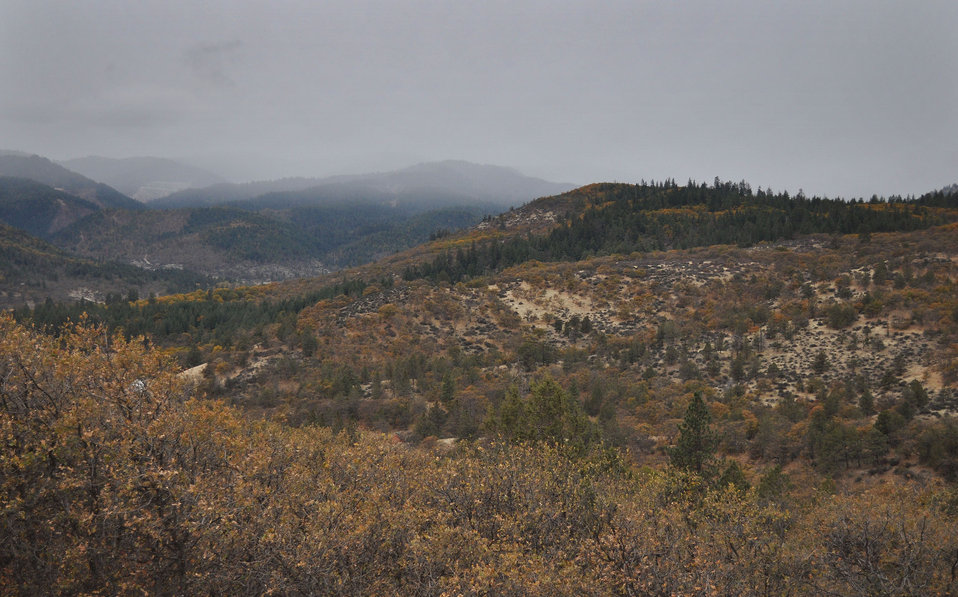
Colestin Valley Restoration Area